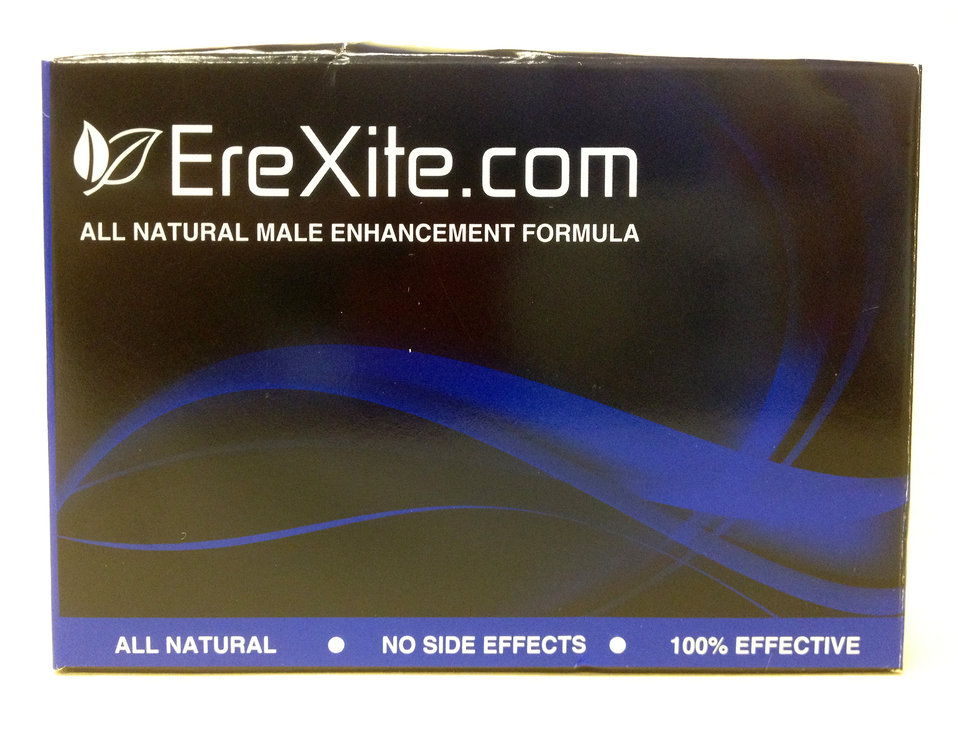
EreXite

May 22, 2012 - The FDA is advising consumers not to purchase or use 'EreXite,' a product promoted and sold for sexual enhancement. The product was found to contain undeclared tadalafil. For more information, go to www.fda.gov/drugs/resourcesforyou/consumers/buyingusingme...

And read this Consumer Update: Beware of Fraudulent ‘Dietary Supplements’